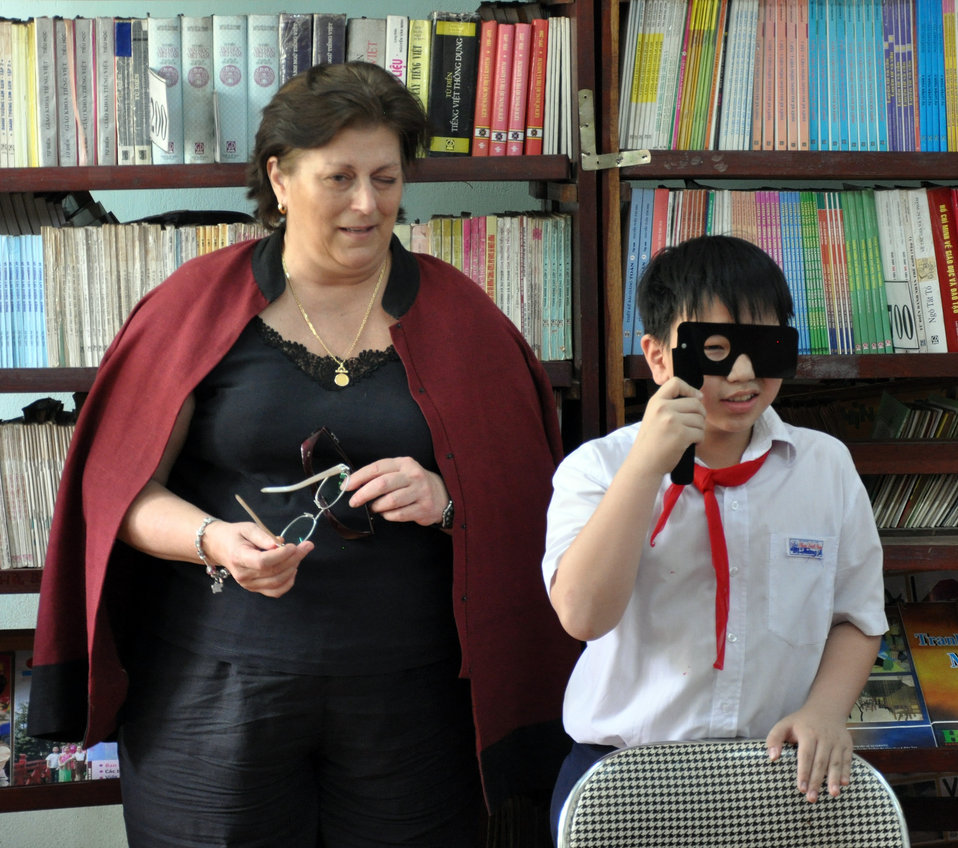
U.S. Embassy Charge d'affaires Claire Pierangelo attends eye screening at Phan Dinh Phung Primary School